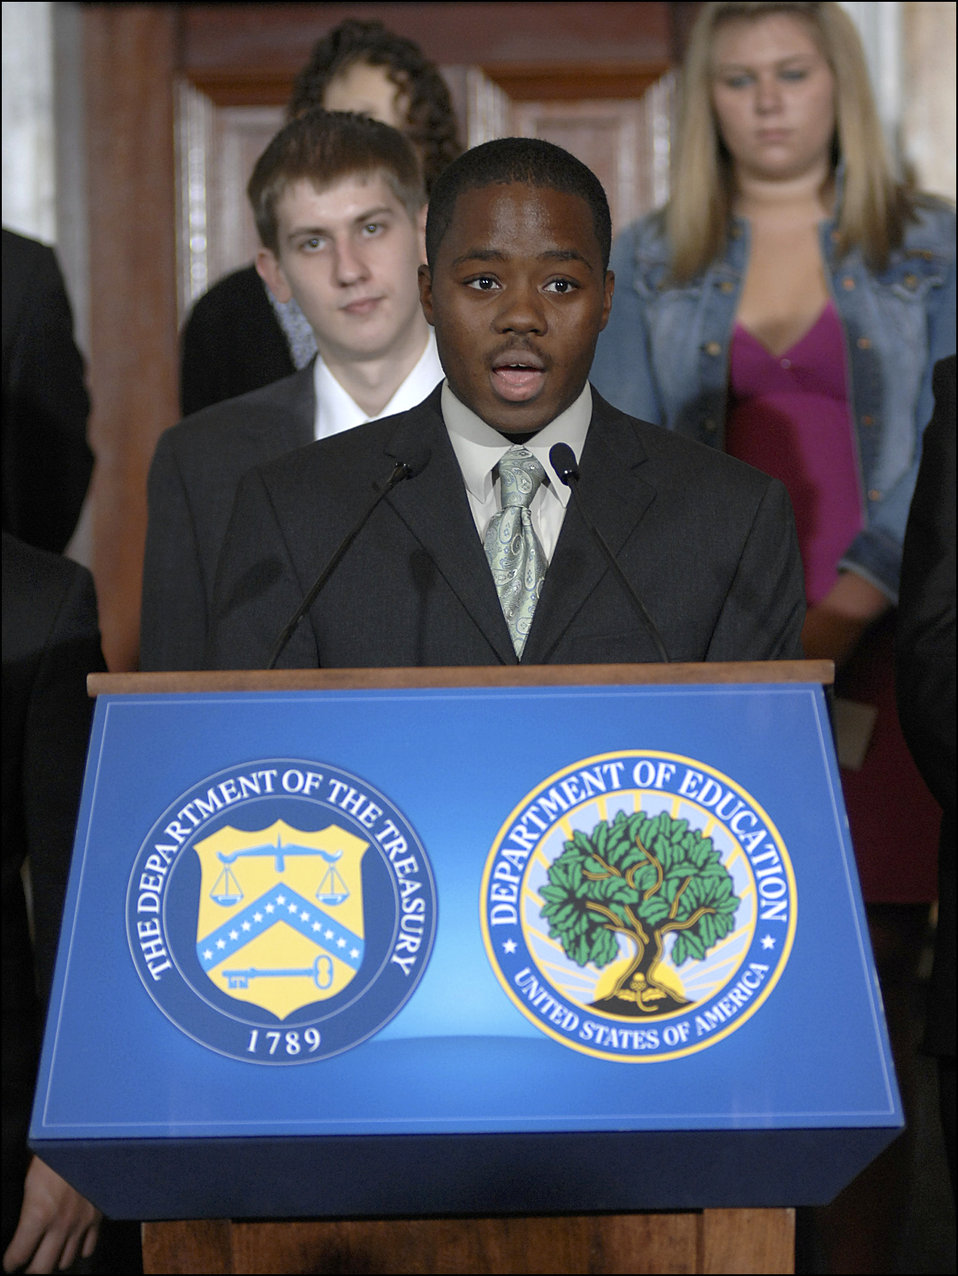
National Financial Capability Challenge, 4/28/10

Aaron Moore, a student at Overlea High School in Baltimore, Maryland, speaks at a National Financial Capability Challenge recognition event at the Treasury Department.